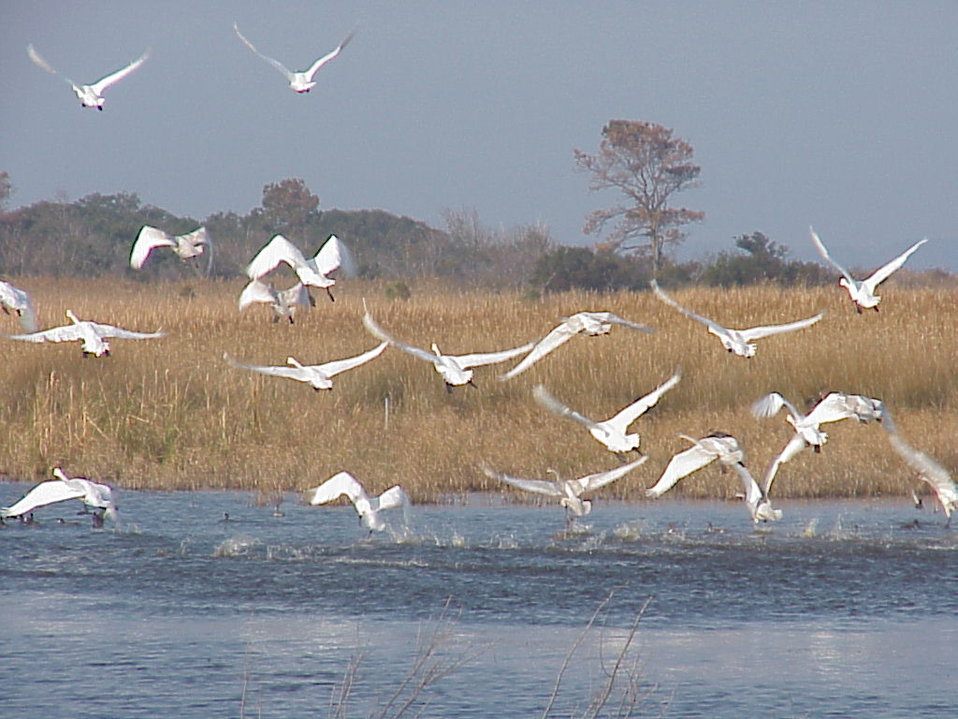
Tundra swans at Back Bay National Wildlife Refuge in Virginia.